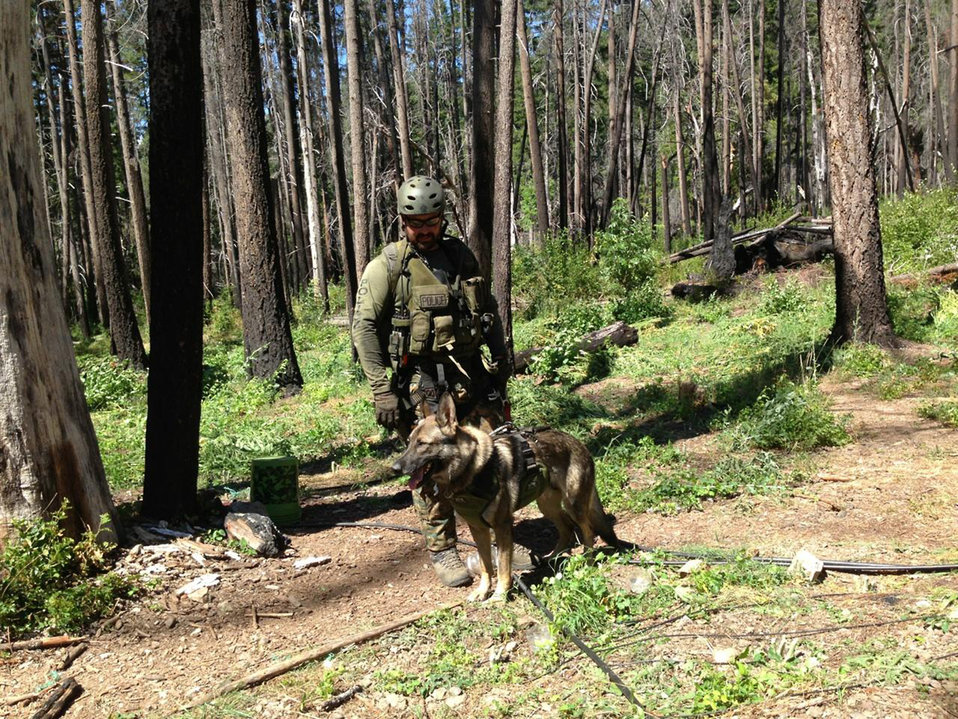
K9 2

U.S. Forest Service law enforcement officer Carson Harris and his K-9 partner, Jasper, patrol the Shasta-Trinity National Forest in California.